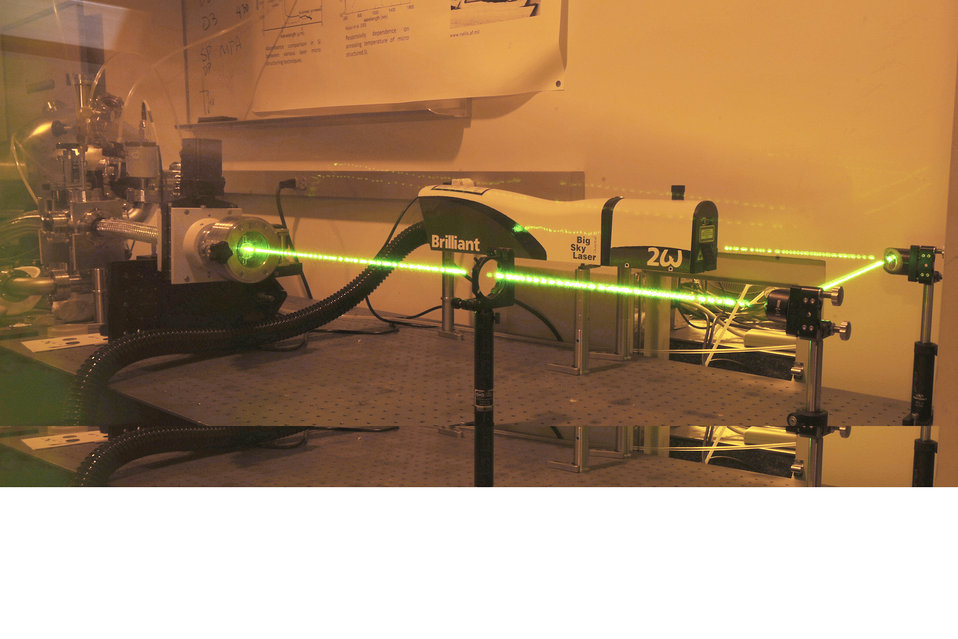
Physicists probe mystery of black silicon

A 200-milliJoule pulse laser fires in this timed exposure Oct. 9, 2009, at the U.S. Air Force Academy in Colorado Springs, Colo. The laser is used for a variety of experiments, including tests to determine how